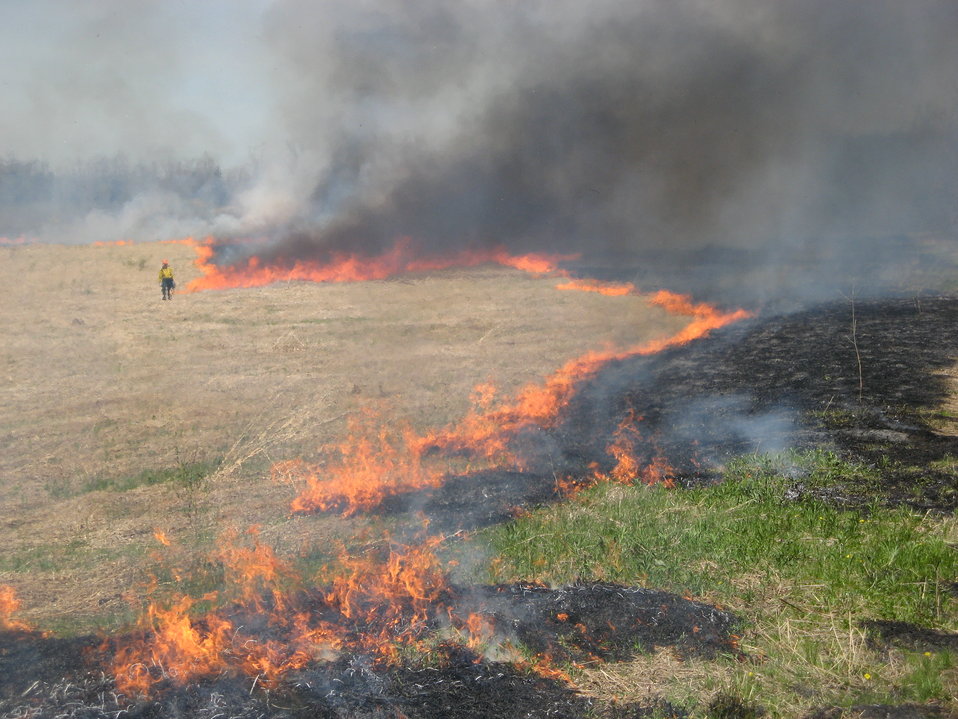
Controlled burn at Iroquois National Wildlife Refuge

Alabama, New York: U.S. Fish and Wildlife Service ortheast region fire planner Rick Vollick lights the interior of a controlled burn at Iroquois National Wildlife Refuge to maintain habitat for grassland breeding birds. Periodic burns keep the fields from growing into forests.